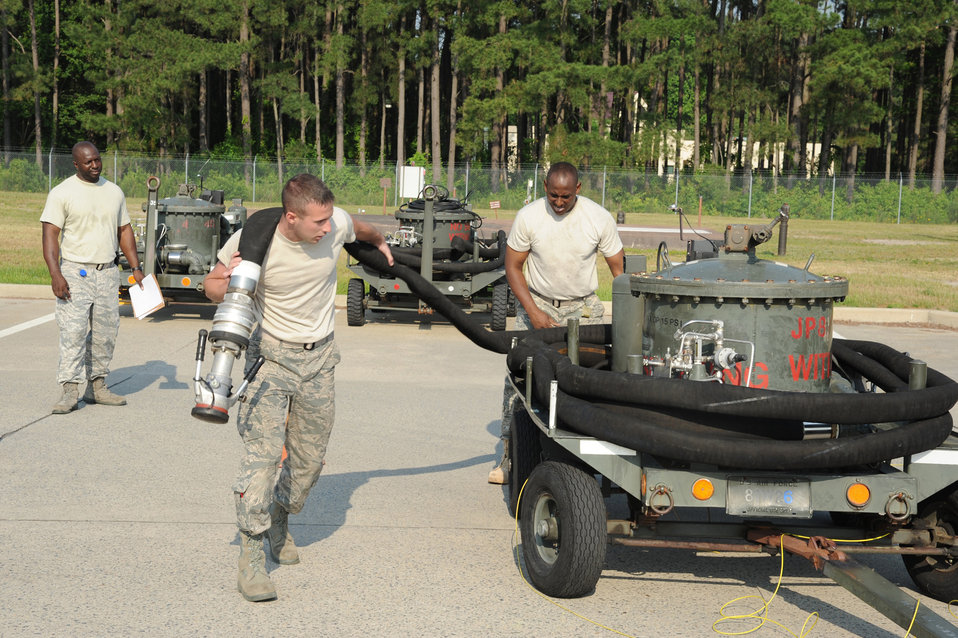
Weapons load competition

Master Sgt. Joseph Vaughn (left) evaluates Master Sgt. Robert Elliott and Airman 1st Class Kurtis Schiemann as they stow hoses on mobile hydrant equipment May 25, 2011, at Seymour Johnson Air Force Base, N.C. All three Airmen are assigned to the 4th Logistic Readiness Squadron. Sergeant Vaughn is the NCO in charge of fuels terminal operations. Sergeant Elliott is the NCO in charge of fuels distribution. Airman Schiemann is a fuels distribution operator.